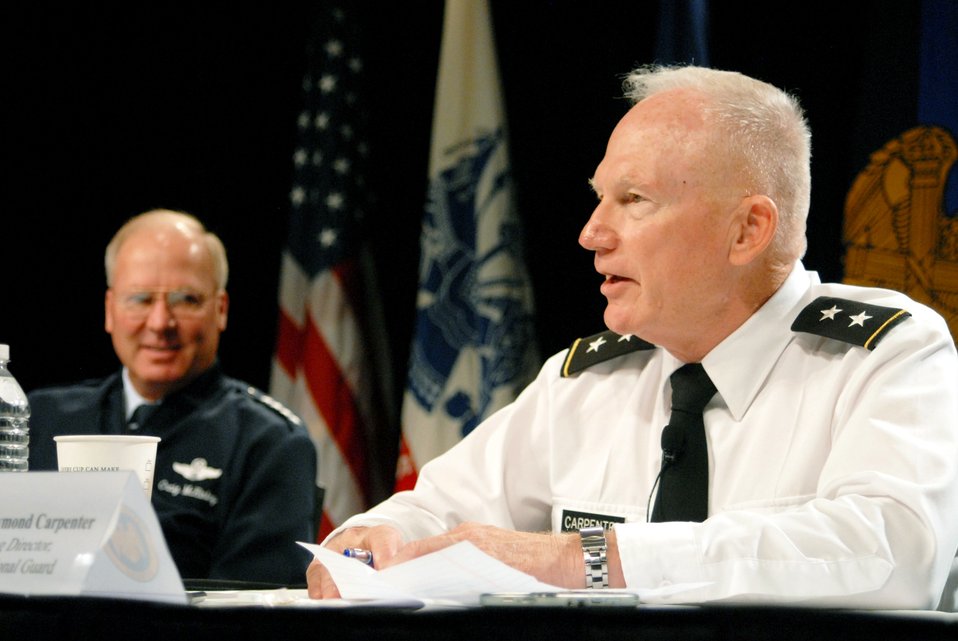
Leaders say volunteers key to Guard's success

Army Maj. Gen. Raymond Carpenter (right), the acting director of the Army National Guard, and Air Force Gen. Craig R. McKinley, the chief of the National Guard Bureau, along with other Guard leaders answered questions from the audience Aug. 2, 2010, during a panel discussion at the 2010 National Guard Volunteer Workshop in New Orleans. More than 1,000 Guard volunteers from the 54 states and territories attended the conference.